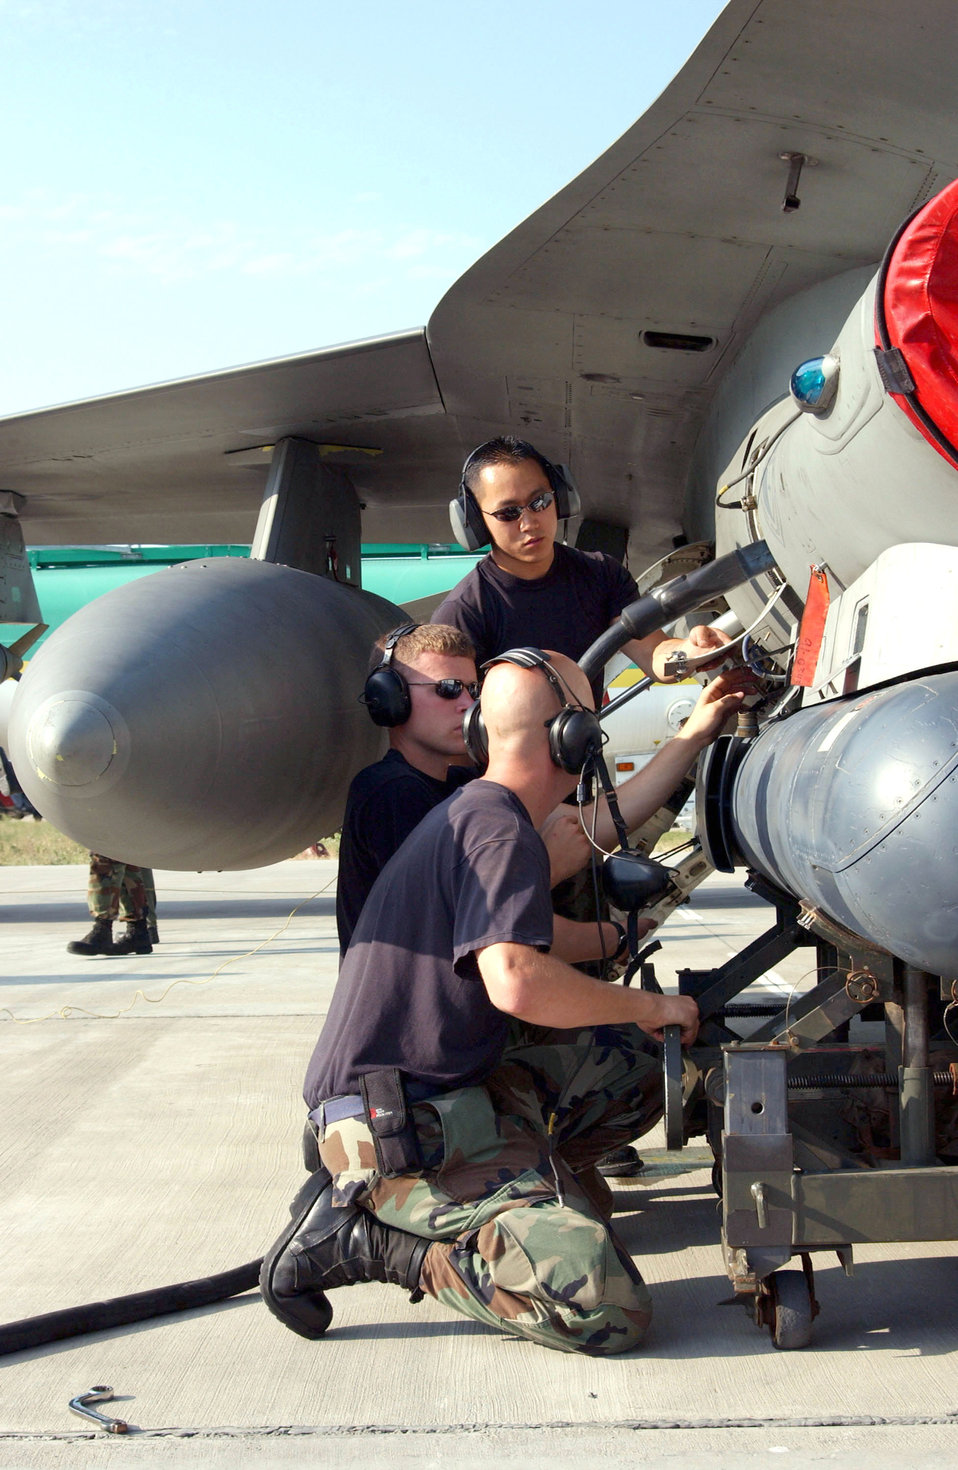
Maintainers keep jets healthy, safe during Viper Lance

(Front to back) Staff Sgts. Jeremy Crombie and Brandon Holloway and Senior Airman Joshua Hood work together to upload a targeting pod on an F-16 Fighting Falcon on Aug. 18 during Exercise Viper Lance 2006 at Mihail Kogalniceanu Air Base, Romania. The Airmen are maintainers assigned to the 22nd Expeditionary Fighter Squadron.